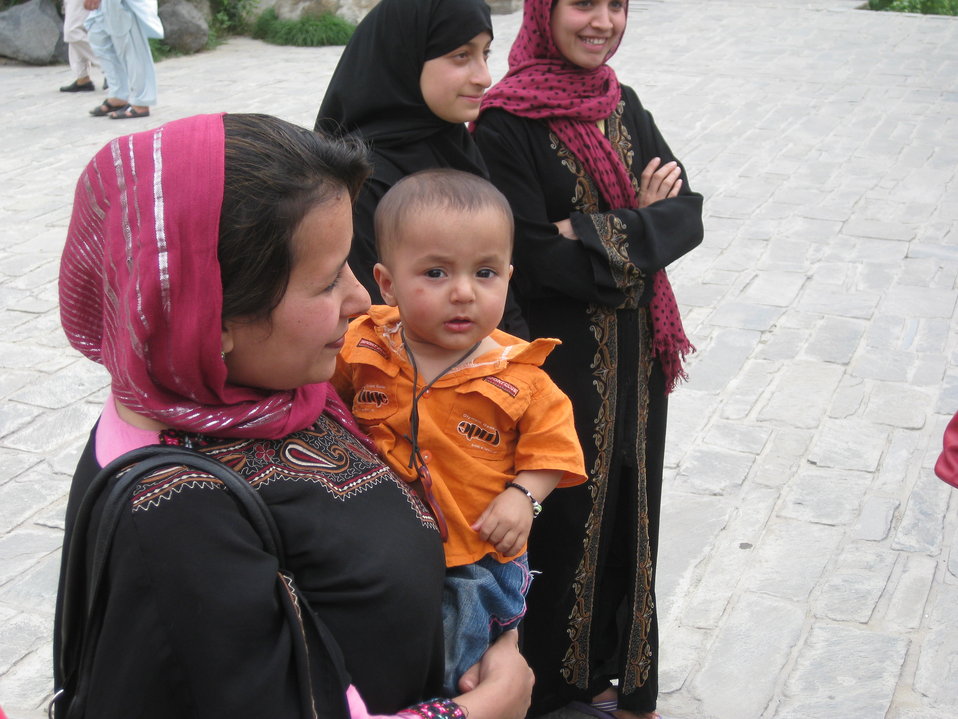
Afghan Youth Voices 093